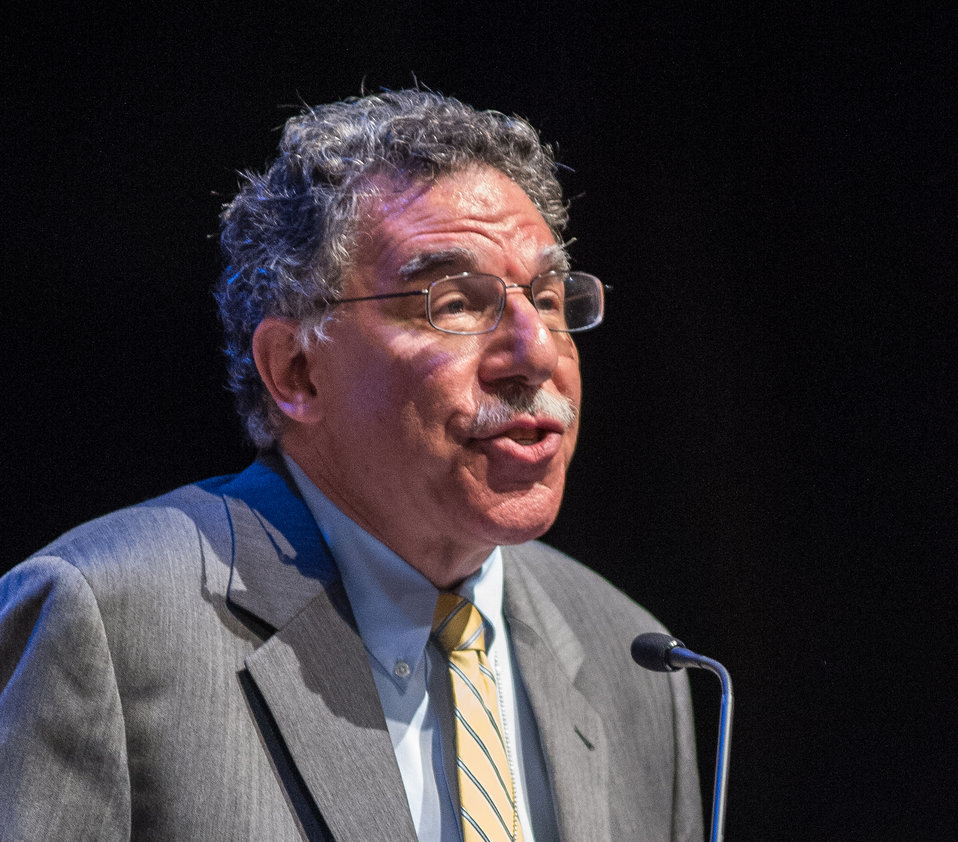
United States Holocaust Memorial Museum Division of the Senior Historian Director Peter Black, Ph.D., moderates the 2013 Federal Inter-Agency Holocaust Remembrance Day, at the Lincoln Theater, on Wednesday, April 17, 2013, in Washington, D.C. Since the 1979 President’s Commission on the Holocaust, an annual proclamation signed by the President of the United States recognizes the importance of remembering the atrocities of the Holocaust that should never be forgotten or be ignored.